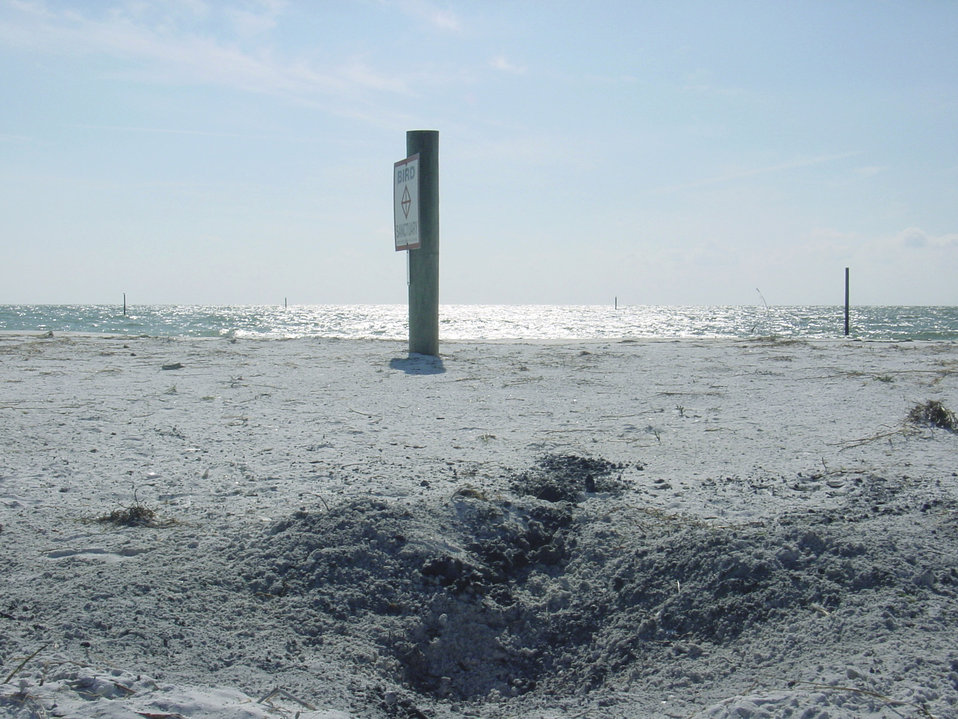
Airmen explode bomb found on Florida beach

PASSAGE KEY ISLAND, Fla. -- A crater remains where a World War II-era M46 photoflash bomb exploded here Oct. 13. Airmen from the explosive ordnance disposal team at nearby MacDill Air Force Base destroyed the old bomb after they decided it was too sensitive to move.